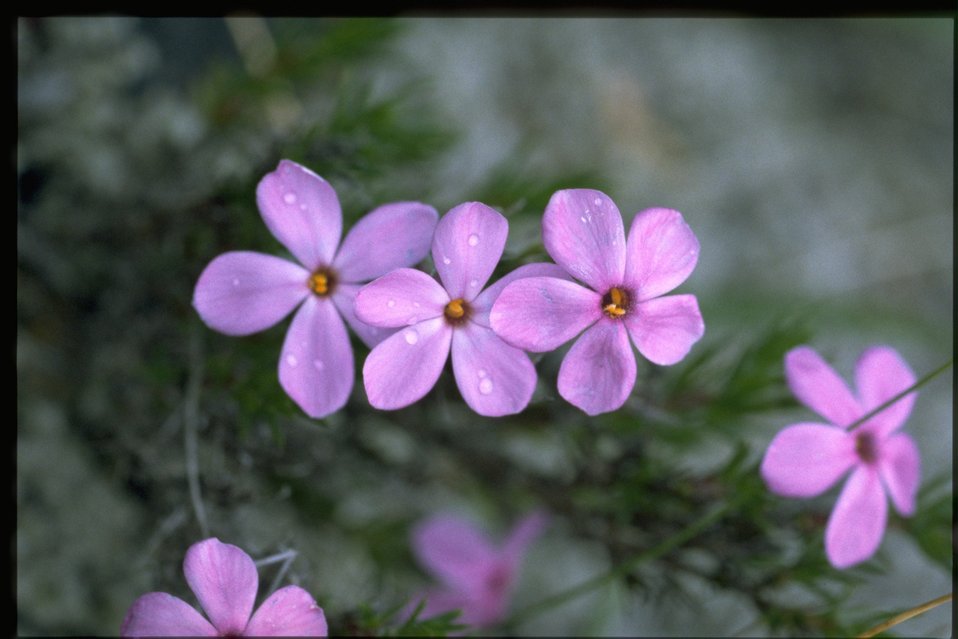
Closeup shot of Phlox diffusa.